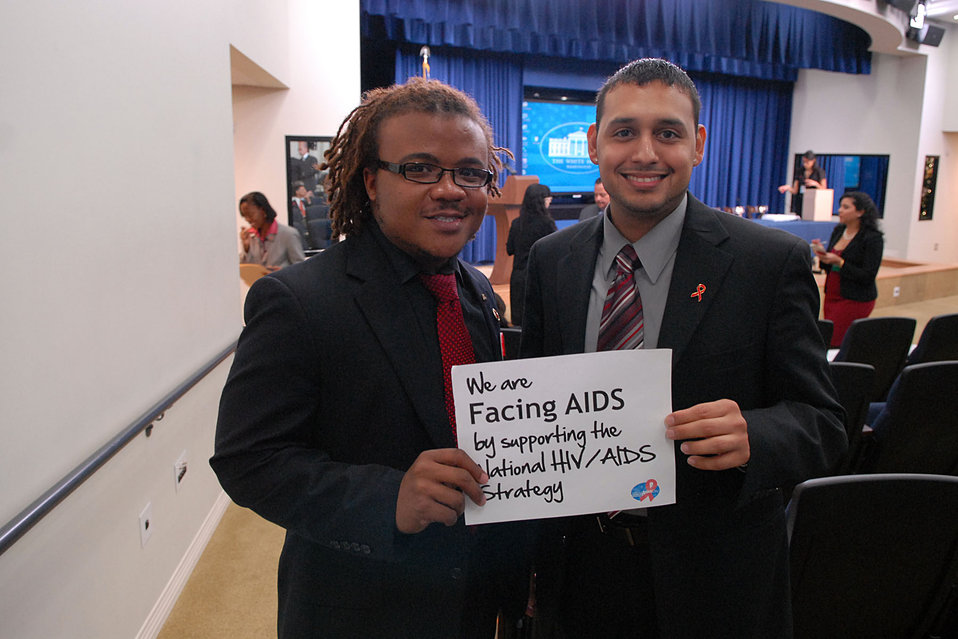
We are Facing AIDS by supporting the National HIV/AIDS Strategy